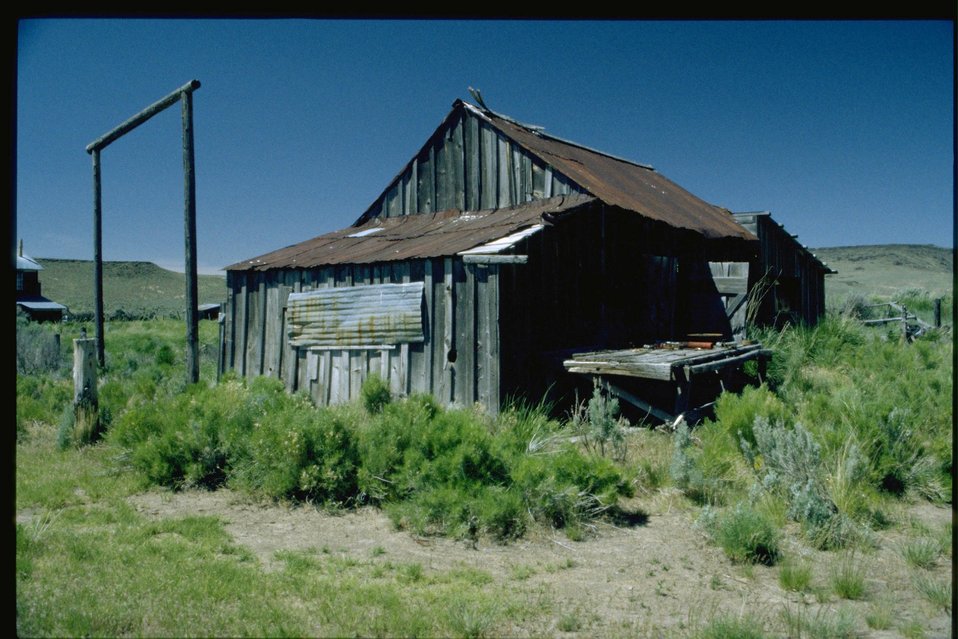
Shirk Ranch.